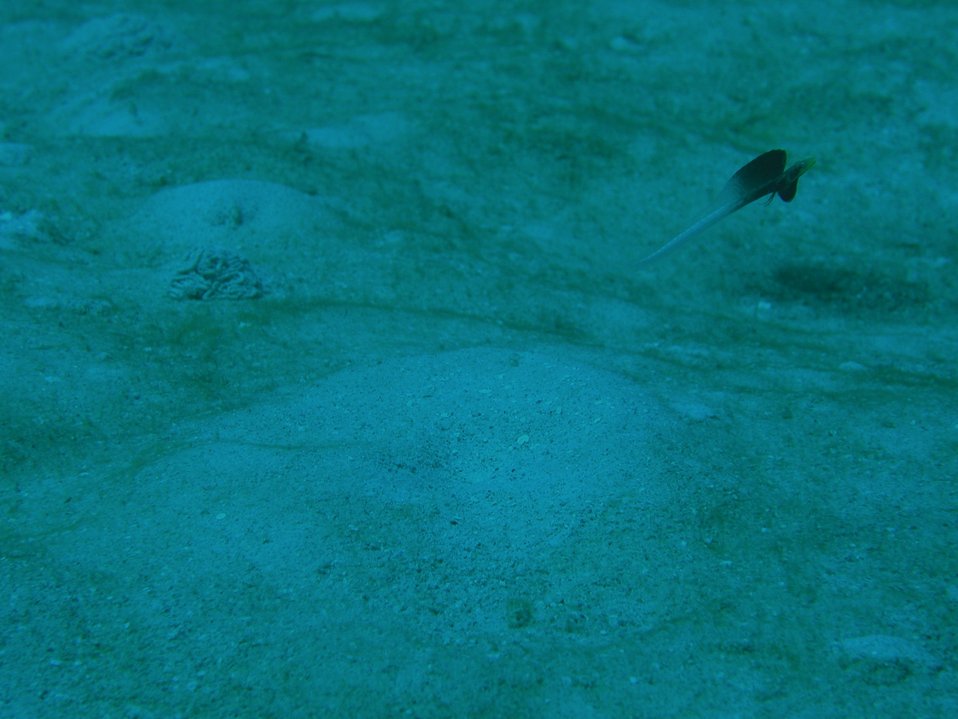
Yellowface pikeblenny (Chaenopsis limbaughi)